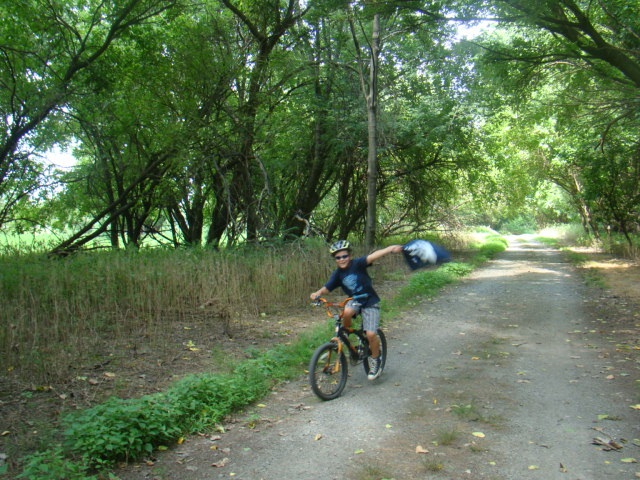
Get Your Goose On!

Owen Moclus showing some Goose! pride.